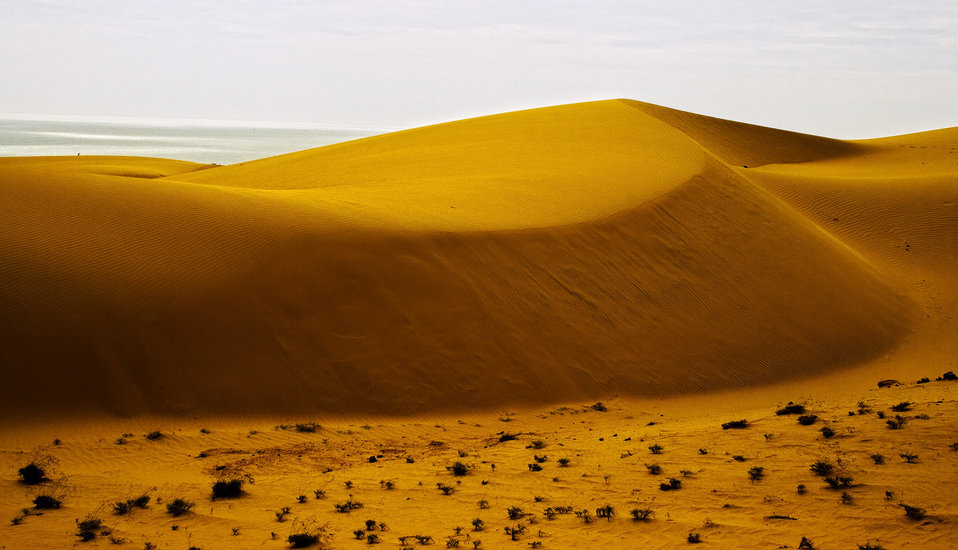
Mui ne sand dunes #6

Sand dunes of mui ne, phan thiet, vietnam..